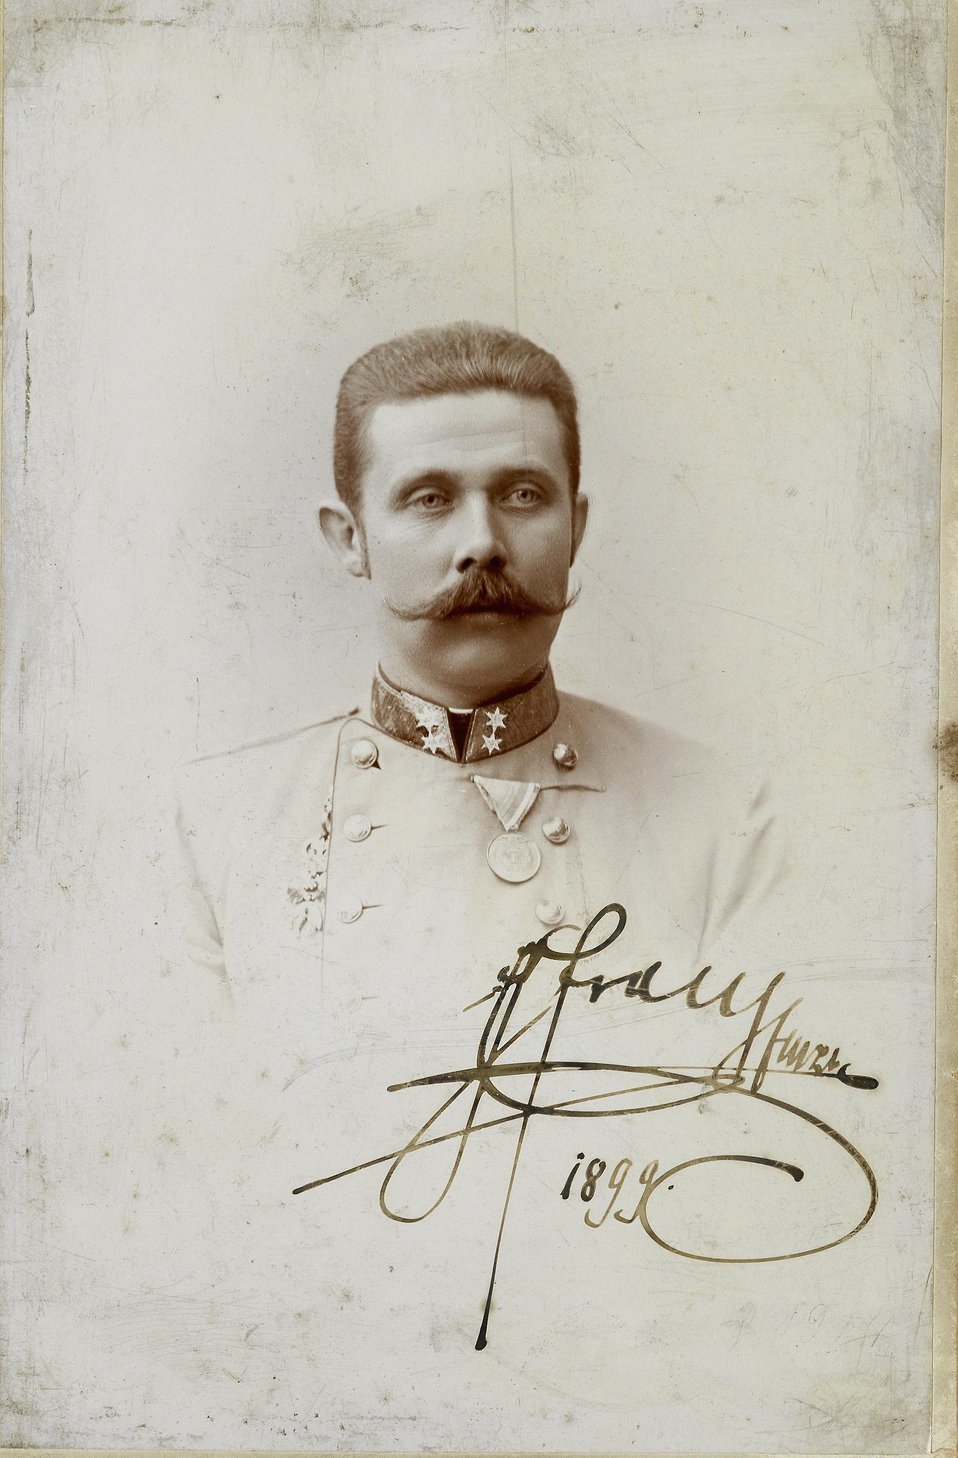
Carl Pietzner Portrait Franz Ferdinand